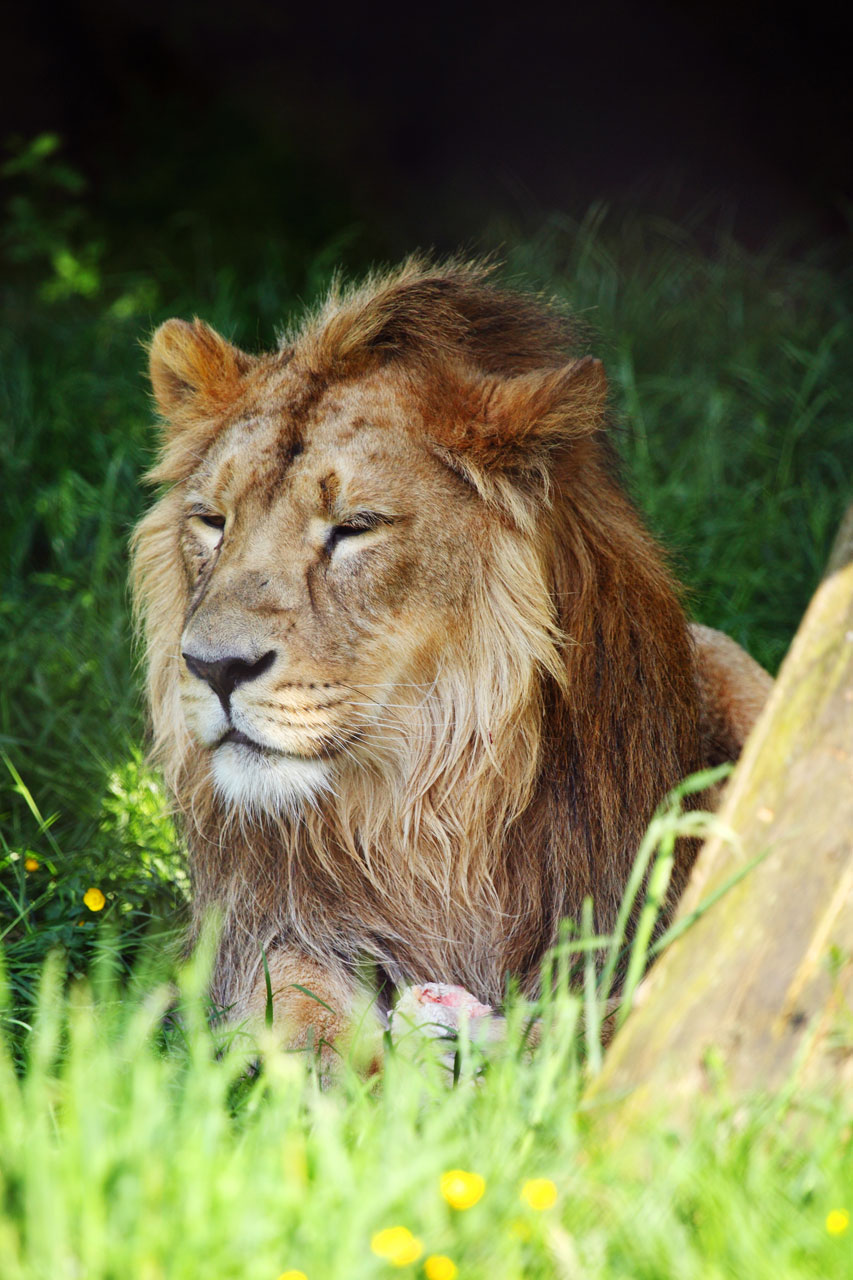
Male lion

Big lion resting on grass in shade.